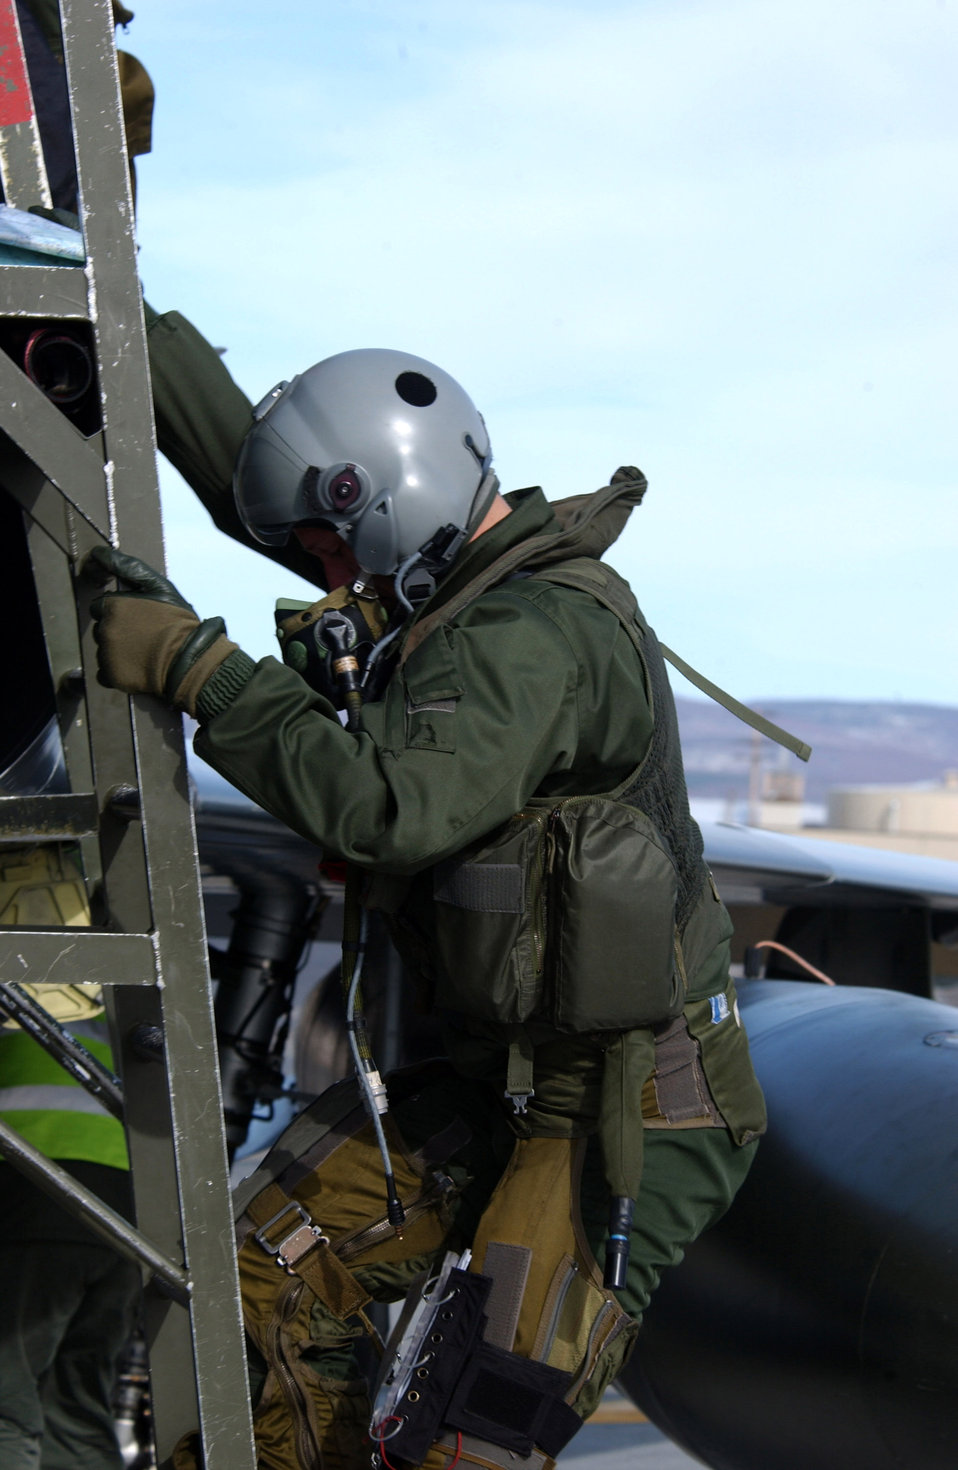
Red Flag forces huddle up at Eielson

French air force 2nd Lt. Zemauli Olivier decends from a M2000 following a Red Flag-Alaska 07-1 mission April 6 at Eielson Air Force Base, Alaska. This exercise provides unique opportunities to help integrate various forces into joint, coalition and bilateral training from simulated forward operating bases. Red Flag-Alaska is a Pacific Air Forces-directed field training exercise flown under simulated air combat conditions.